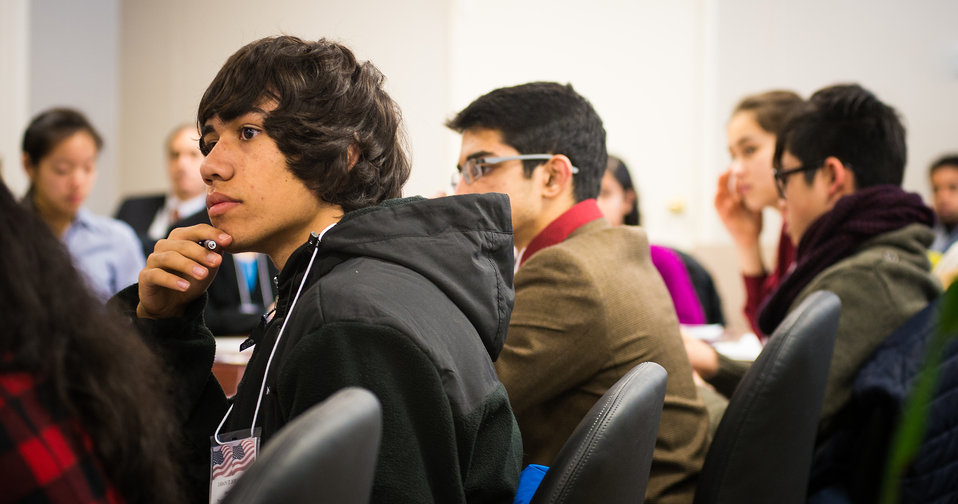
Jason Thomas, a student from Thomas Jefferson High School of Science and Technology in Alexandria, VA. listens to a speaker during the U.S. Department of Agriculture (USDA), Office of the Chief Information Officer (OCIO) IT Job Shadow Day, Tuesday, Mar. 25, 2014. The OCIO IT Job Shadow Day hosts students from local high schools in the Washington, D.C. area annually with IT professionals and agricultural specialists from a variety of mission areas at USDA.